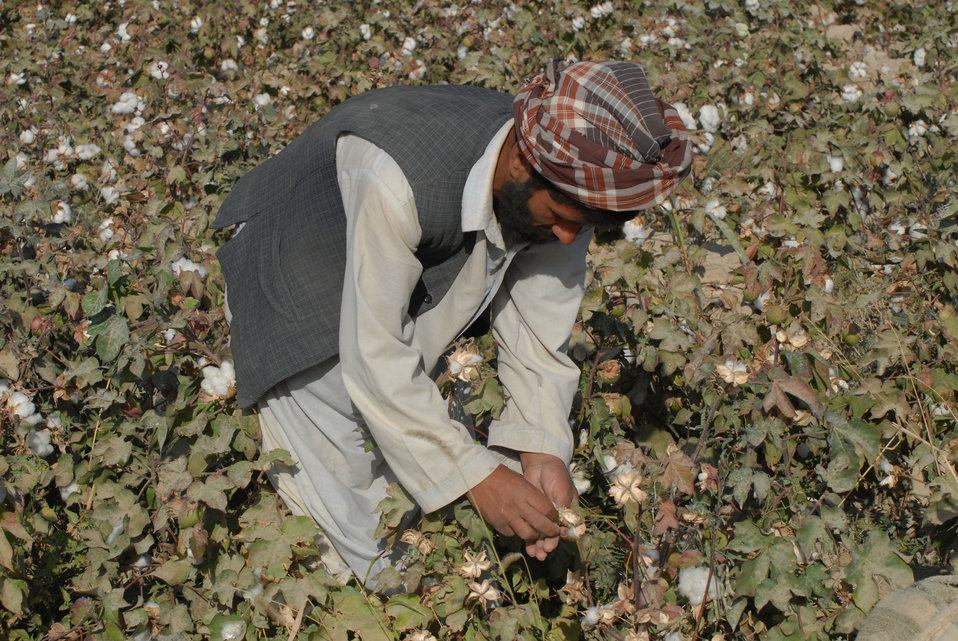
'On the Road' in Balkh Province